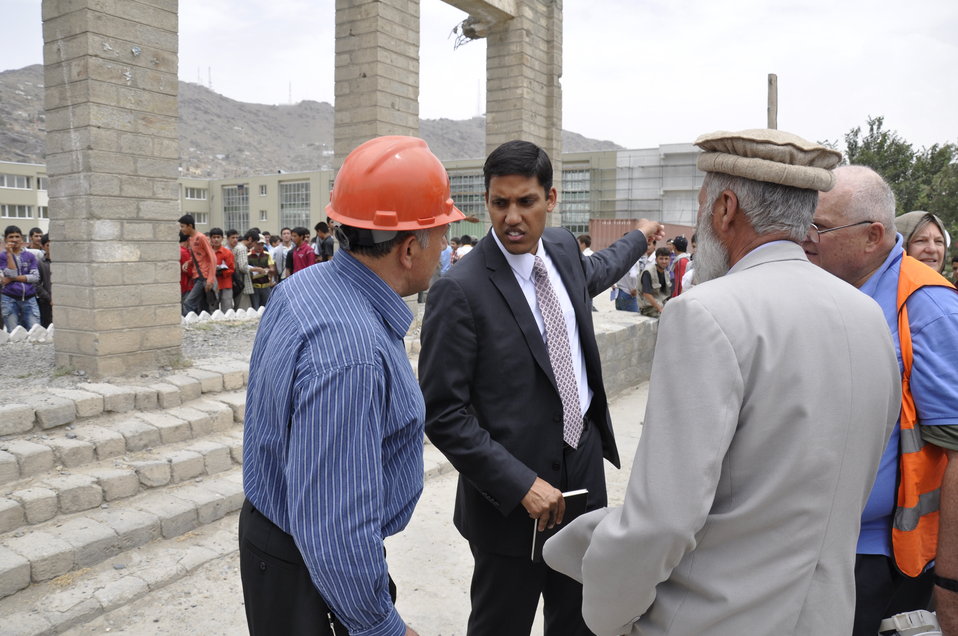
Ghazni High School in Kabul